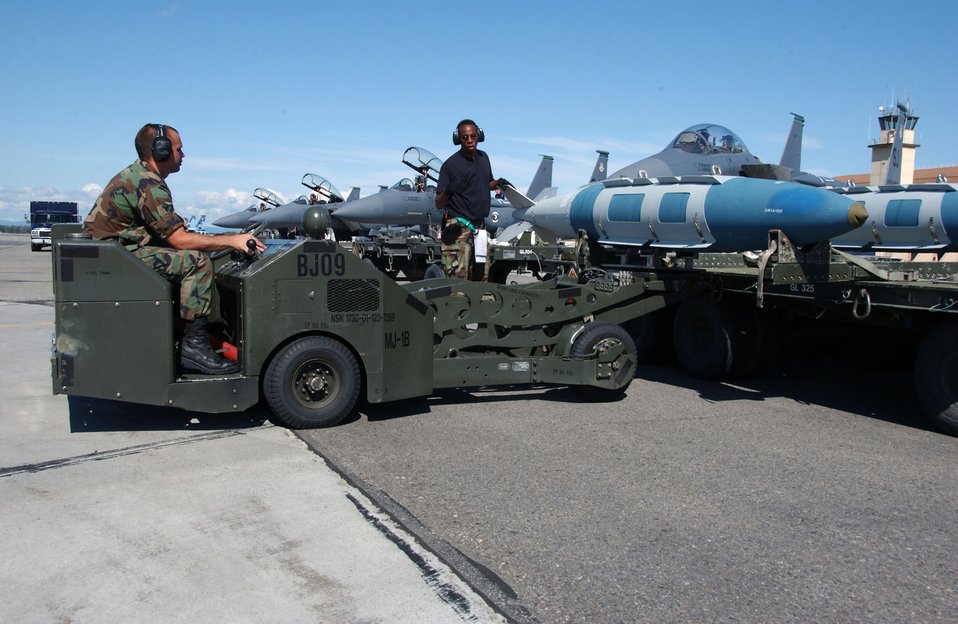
Strike Eagle fully loaded

Staff Sgt. Ray Saunders (right) and Airman 1st Class Scott Perish prepare to transport a guided bomb unit-31 bomb onto an F-15 Strike Eagle at Eielson Air Force Base, Alaska, July 24 during Red Flag-Alaska 07-3. The Airmen are weapons armament system specialists with the 4th Aircraft Maintenance Squadron at Seymour Johnson Air Force Base, N.C.